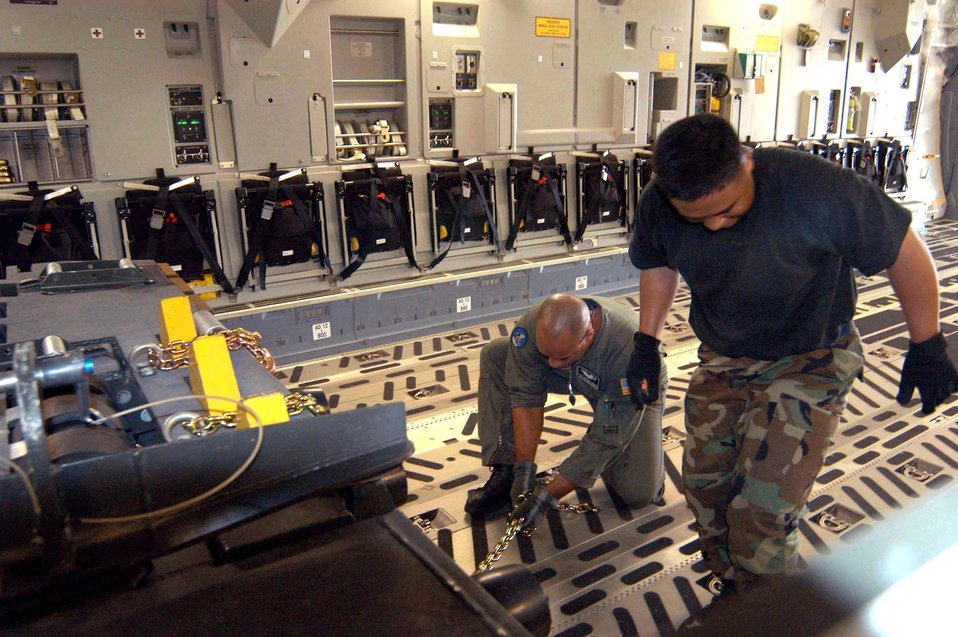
Airmen bring relief to tsunami-devastated region

UTAPAO, Thailand -- Staff Sgt. Bryan Amaya (left) and Master Sgt. Darwin Basaca work to secure equipment onboard a C-17 Globemaster III bound for Banda Aceh, Indonesia. Sergeant Amaya is a loadmaster with the 8th Airlift Squadron at McChord Air Force Base, Wash., and Sergeant Basaca is with the 615th Air Mobility Squadron from Travis Air Force Base, Calif.